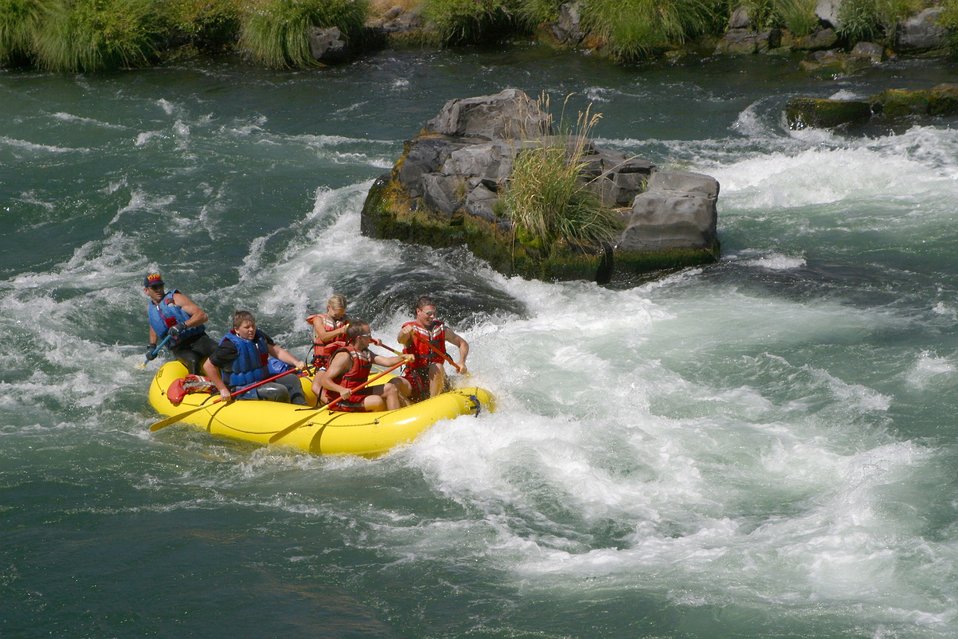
Wapinitia Rapids class III, has large roller coaster waves. 7/26/03 Pelton Dam 3600 cfs: Moody Rapids 4300 cfs.